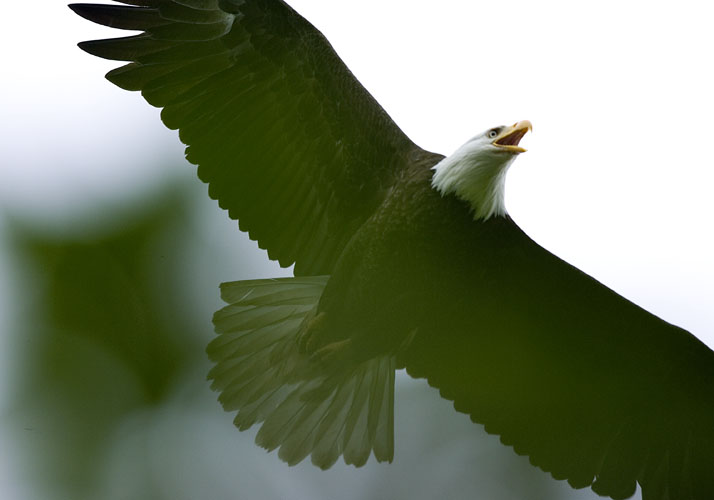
KOD Hildebrand (3)

Kodiak National Wildlife Refuge- Wildlife